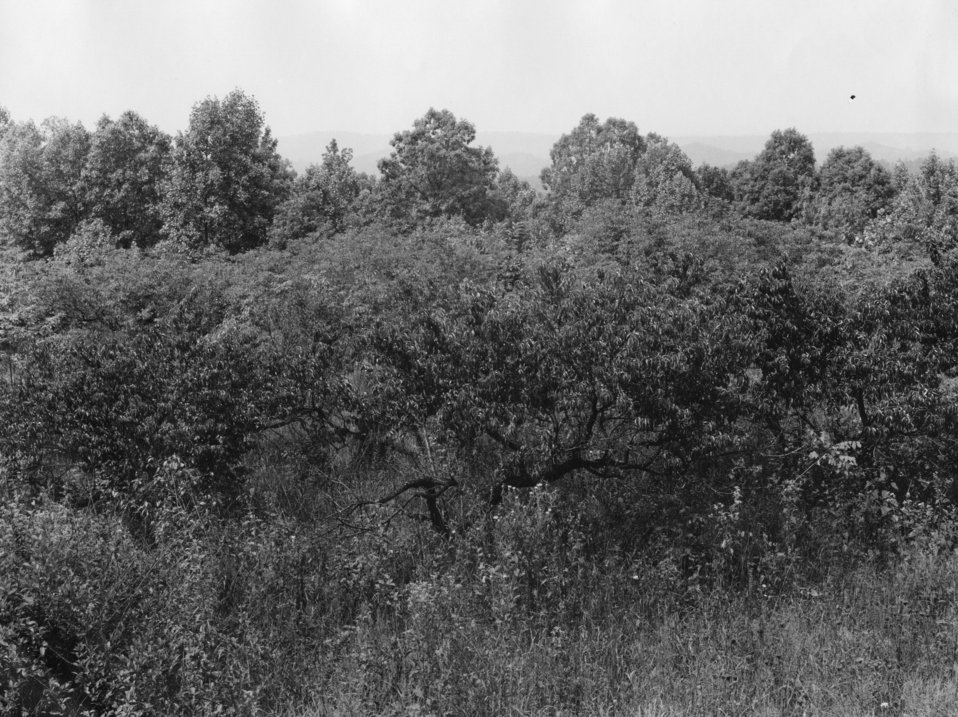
Early settlers at Oak Ridge